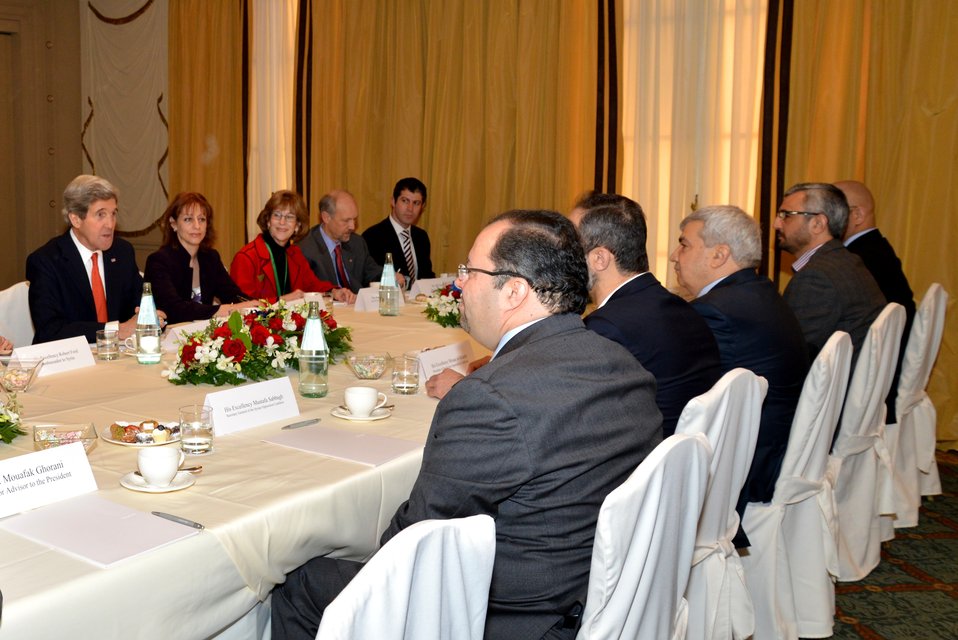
Secretary Kerry Meets With Syrian Opposition Leaders

U.S. Secretary of State John Kerry meets with Syrian Opposition Leaders in Rome, Italy, on February 28, 2013.